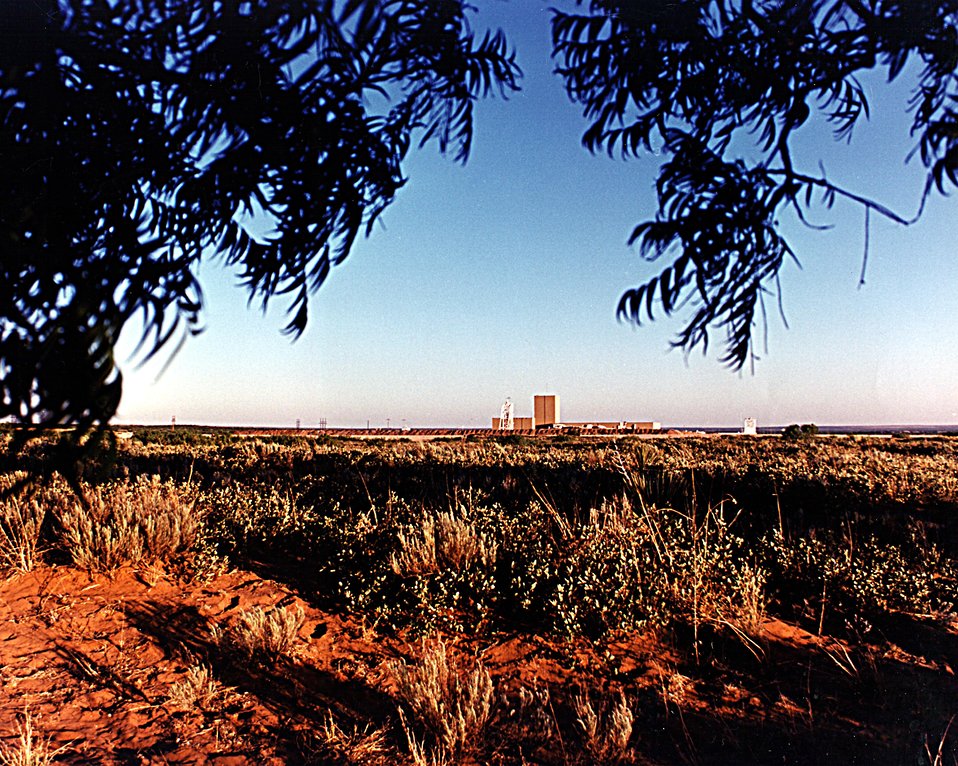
WIPP SITE WITH MESQUITES.

THE WASTE ISOLATION PILOT PLANT IS A DOE RESEARCH AND DEVELOPMENT FACILITY FOR DEMONSTRATING THE SAFE DISPOSAL OF TRANSURANIC RADIOACTIVE WASTE. FOUR VERTICAL SHAFTS CONNECT THE SURFACE FACILITIES TO THE UNDERGROUND. THE SHAFTS, ONE 21 FEET IN DIAMETER AND THE OTHERS 14 FEET IN DIAMETER, PROVIDE A MEANS OF TRANSPORTING THE WASTE, WORKERS, EQUIPMENT, MINED SALT, AND FRESH AIR FROM THE SURFACE TO THE UNDERGROUND SALT ROCK FORMATION THAT IS BEING TESTED TO DETERMINE SUITABILITY FOR RADIOACTIVE WASTE STORAGE. RADIOACTIVE BIN-SCALE TESTS ARE SCHEDULED TO BEGIN BEFORE THE END OF 1991.